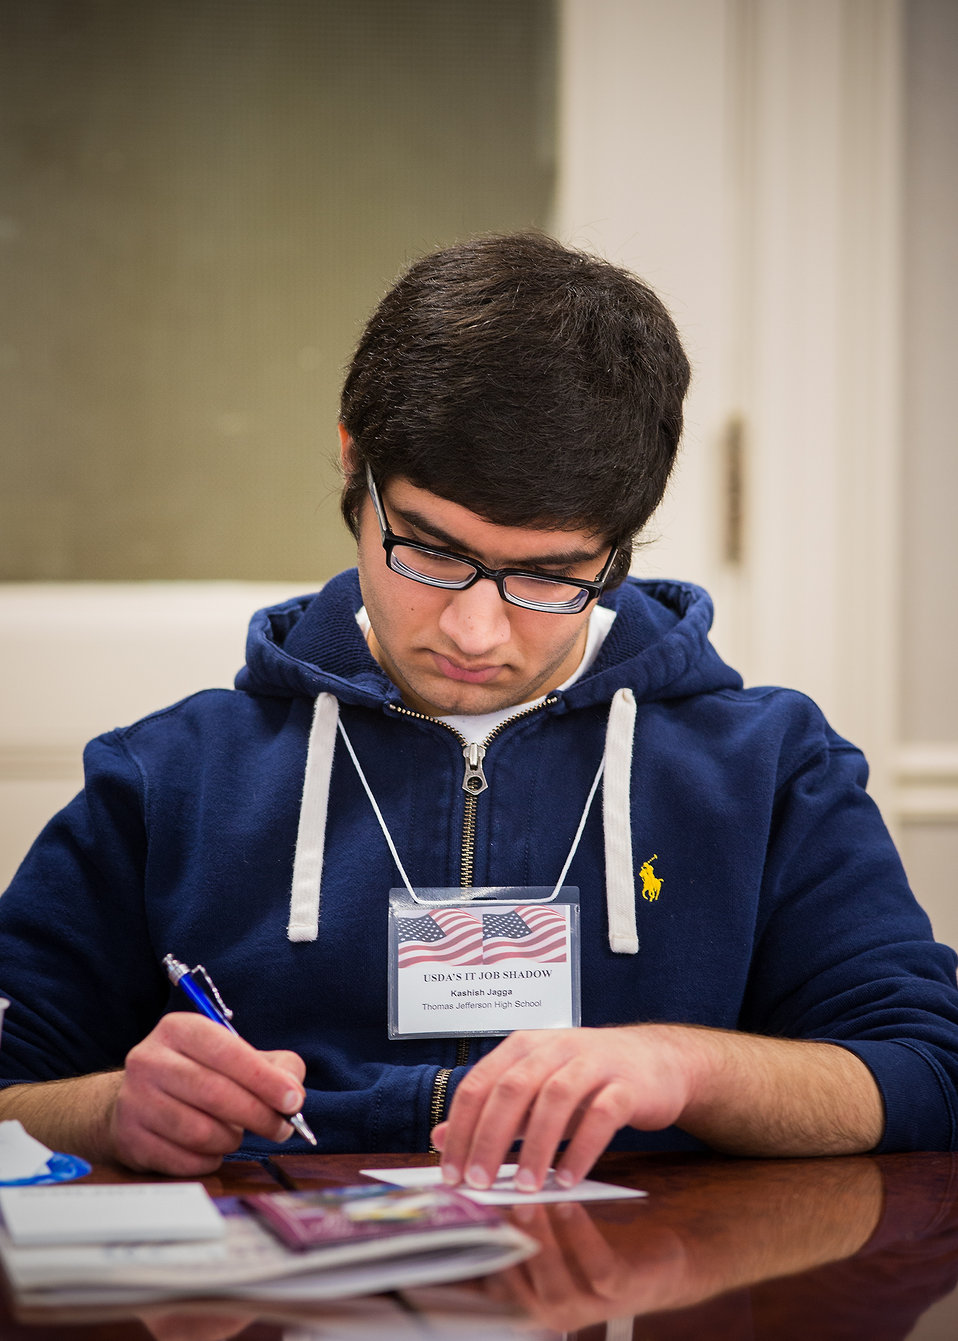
Kashish Jagger, a student from Thomas Jefferson High School of Science and Technology in Alexandria, VA. takes notes during the U.S. Department of Agriculture (USDA), Office of the Chief Information Officer (OCIO) IT Job Shadow Day, Tuesday, Mar. 25, 2014. The OCIO IT Job Shadow Day hosts students from local high schools in the Washington, D.C. area annually with IT professionals and agricultural specialists from a variety of mission areas at USDA.